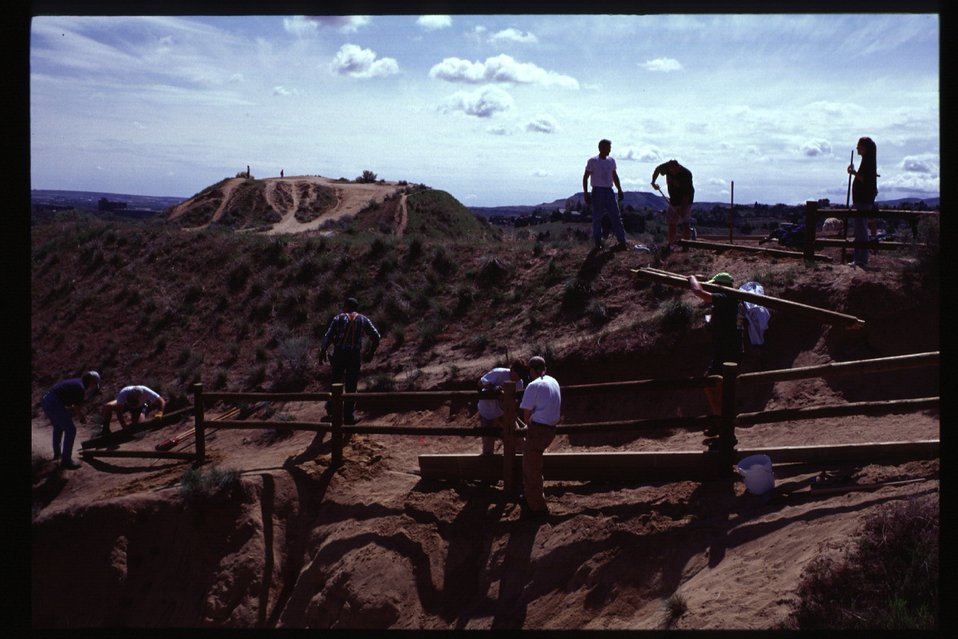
Rangeland and environmental education Boise Front Tending our Foothills Trail work Camels Back Park Four Rivers Field Office LSRD Lower Snake River District